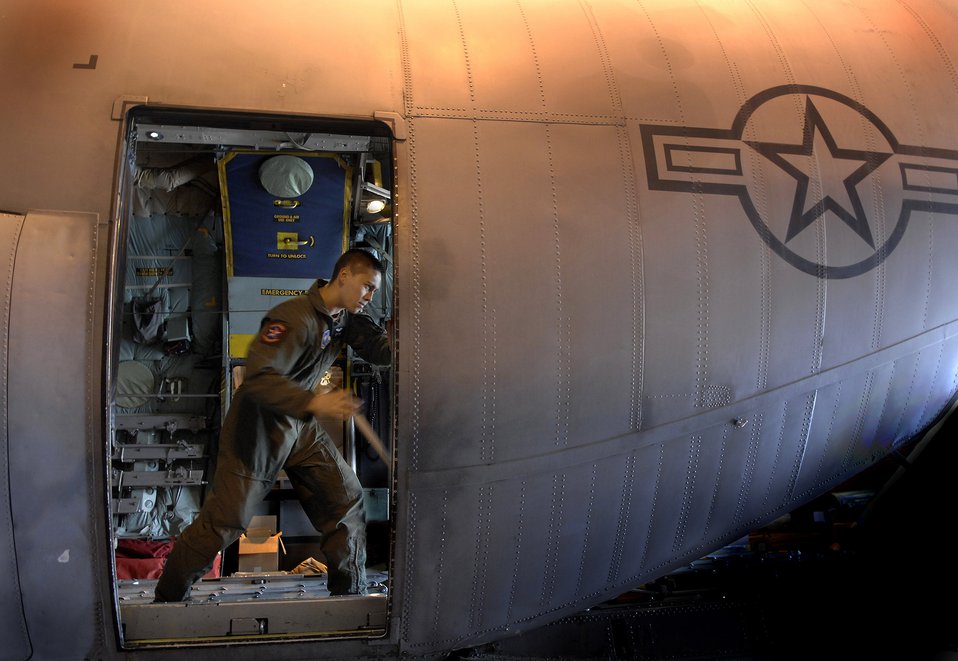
Practice makes perfect

Airman 1st Class Justin Magno manually lowers the ramp on a C-130 Hercules trainer at Little Rock Air Force Base, Ark., Nov. 1. The trainers are C-130s that have had the wings taken off and let students train on the actual hardware. Airman Magno is a student with the C-130 Center of Excellence.